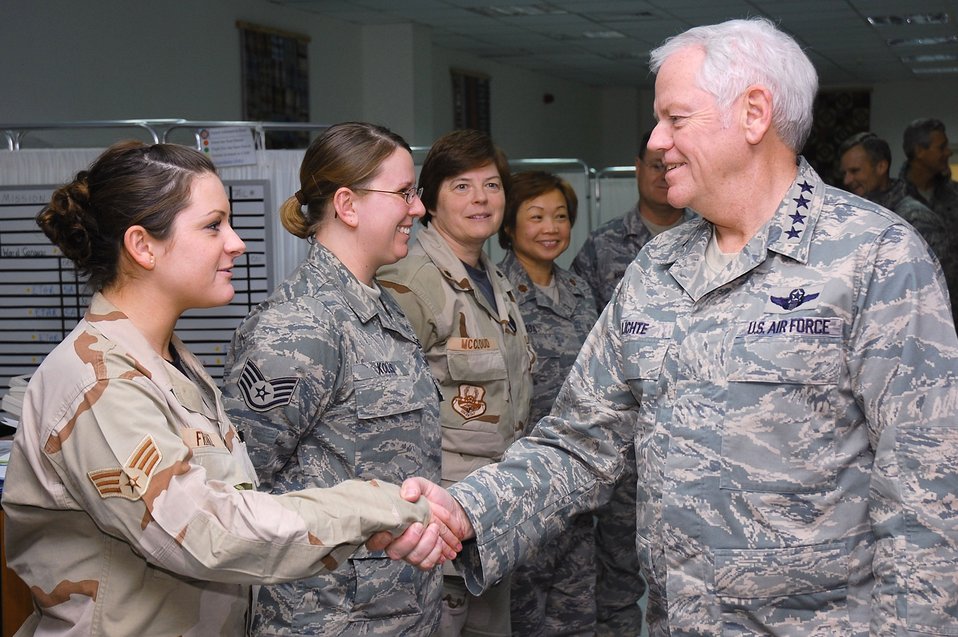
AMC commander visits Airmen in Southwest Asia

Gen. Arthur J. Lichte greets Senior Airman LizaMarie Franz Jan. 7 at a Southwest Asia air base. General Lichte, commander of Air Mobility Command, was making his first visit downrange since taking command in September. Airman Franz is assigned to the 386th Expeditionary Medical Group.